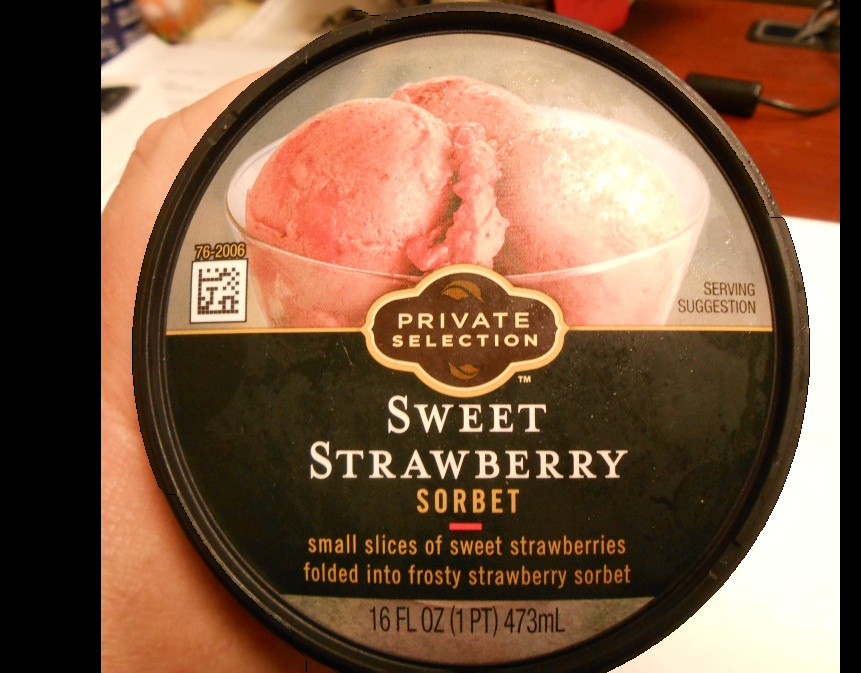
RECALLED - Strawberry Sorbet

April 12, 2014 - Product Recall - Private Selection Sweet Strawberry Sorbet Recalled for Undeclared Allergen.